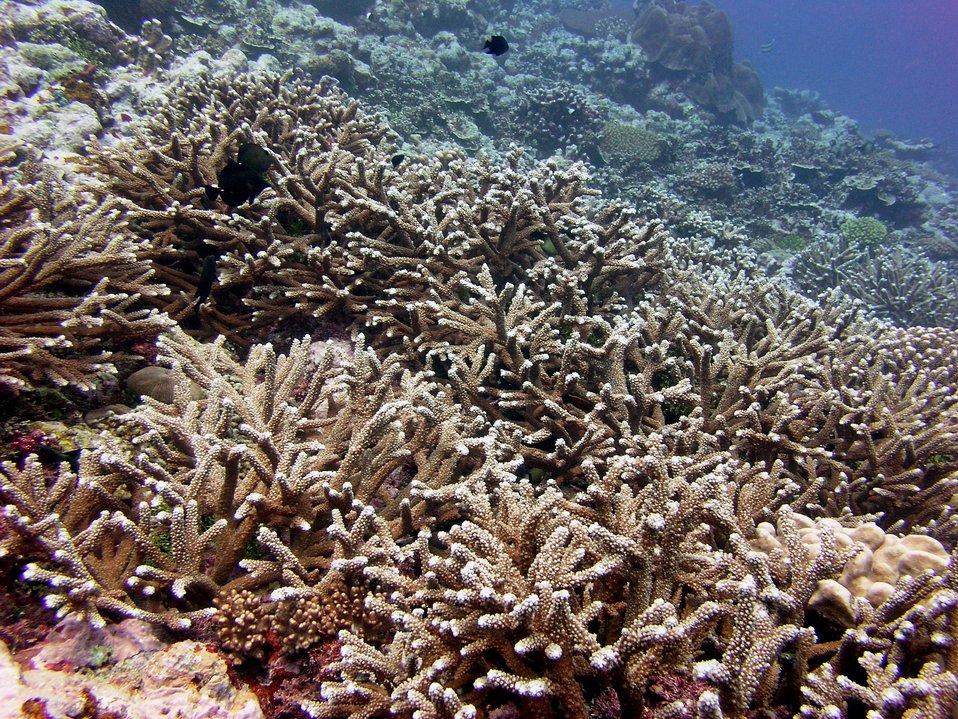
Coral reef scene